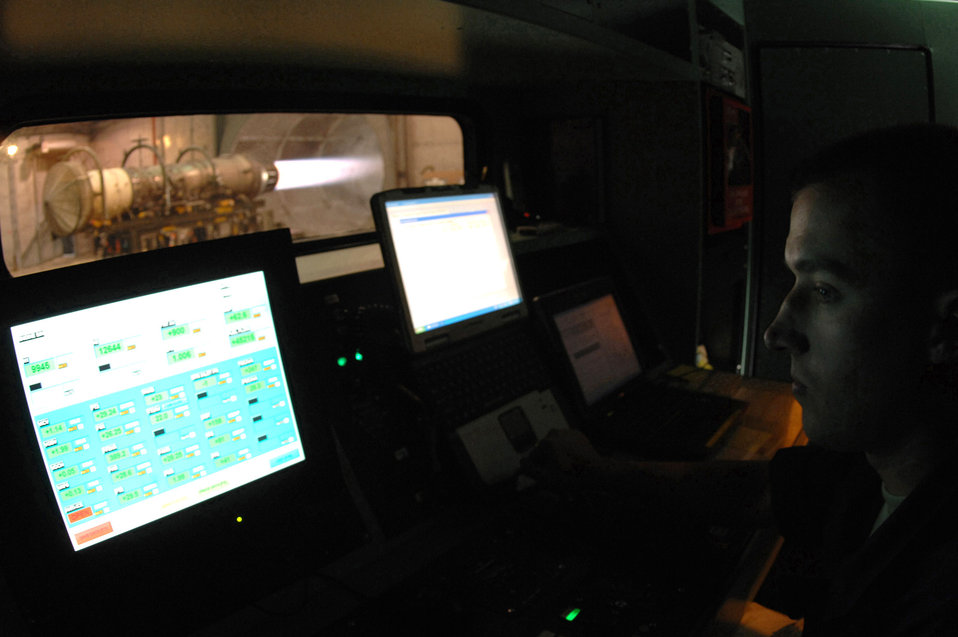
Engines running

Staff Sgt. Brian Hlywa performs a diagnostic check on an uninstalled Pratt and Whitney F-100-PW-220 jet engine at Seymour Johnson Air Force Base, N.C., May 21. The F-100-PW-220 is the engine used in the 4th Fighter Wing's F-15E Strike Eagles, the Air Force's all-weather, dual-role fighter jet. Sergeant Hlywa is responsible for making final inspections on these engines before they are reinstalled in the aircraft. Sergeant Hlywa is an aerospace propulsion specialist with the 4th Component Maintenance Squadron.